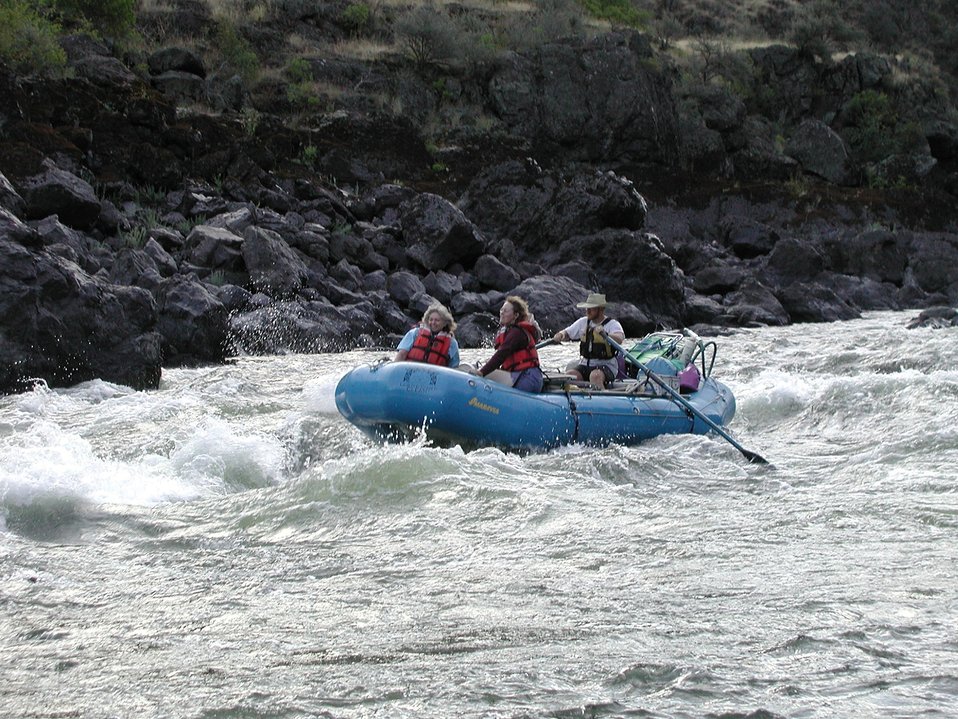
Recreation Rafting on Lower Salmon River Cottonwood Field Office UCSC Upper Columbia Salmon Clearwater District